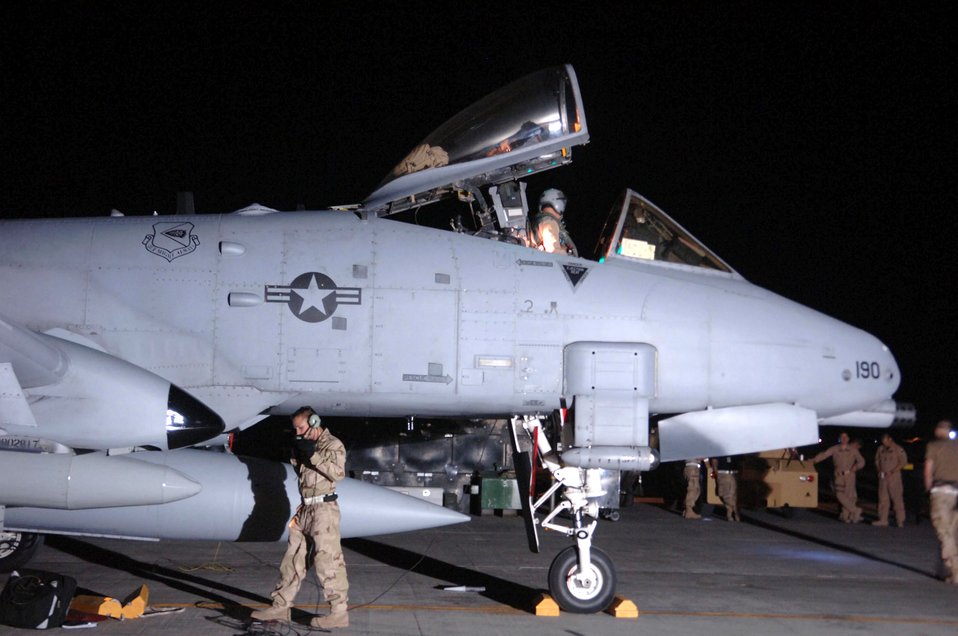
A-10s arrive at Bagram

Maintainers recover an A-10 Thunderbolt II as aircrew members wait to greet the pilot after arrival at Bagram Air Base, Afghanistan, April 17. The arrival of A-10s adds a second fighter squadron to the 455th Air Expeditionary Wing.